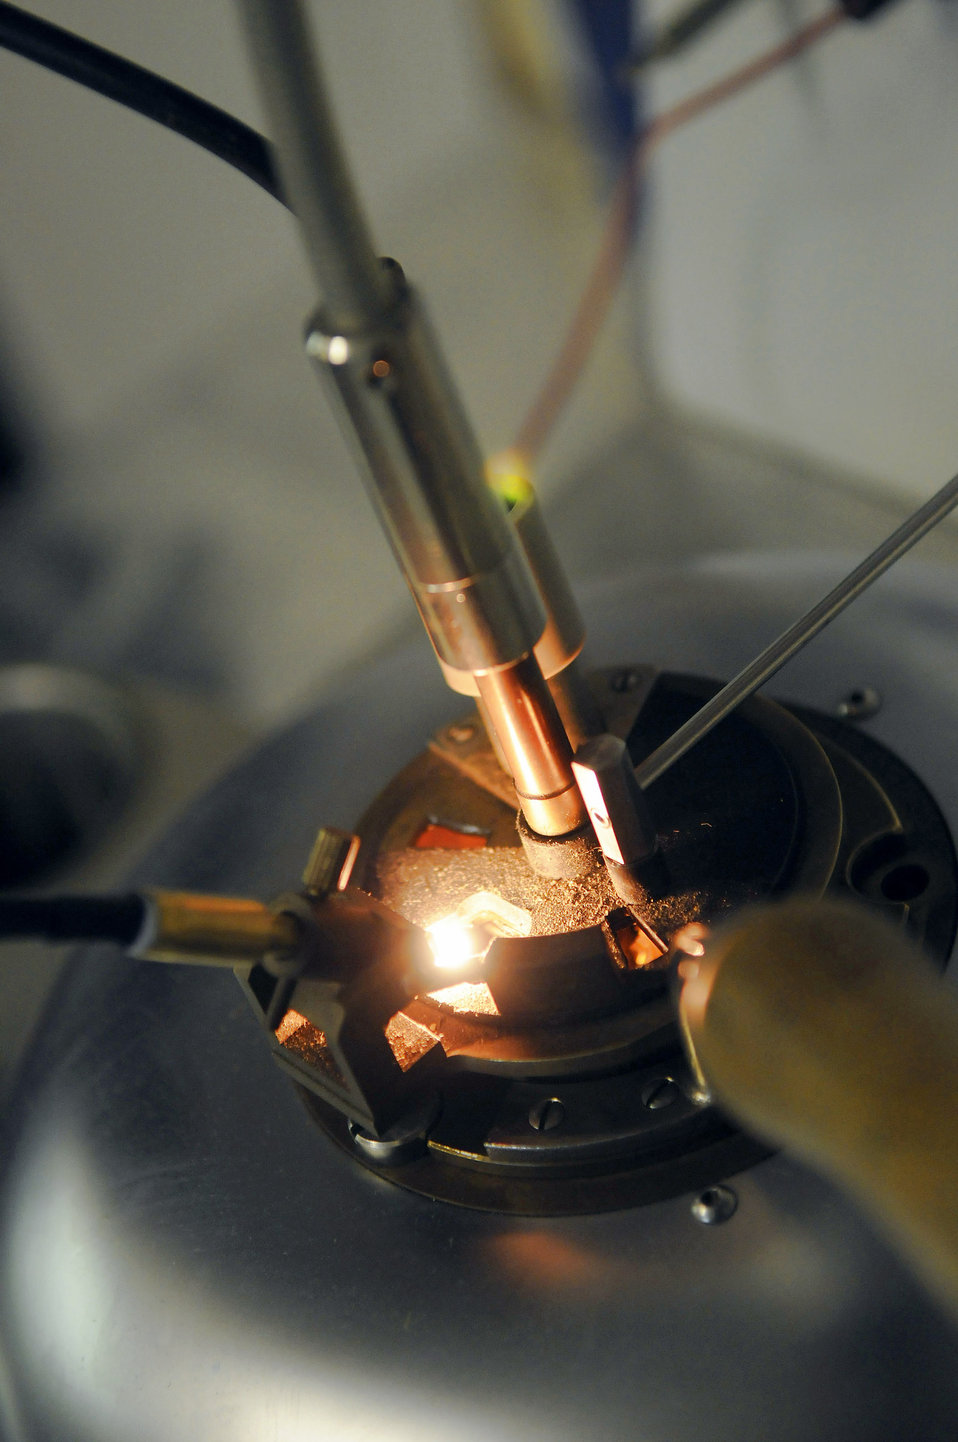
Fuel quality

An ignition coil is exposed over JP-8 fumes during a flash point test Dec. 8 at an air base in Southwest Asia. Staff Sgt. Ronald Gasper, a fuels lab technician assigned to the 379th Expeditionary Logistics Readiness Squadron, uses a flash tester to perform a flash point test. The flash point test is used to determine the temperature at which the fuel will ignite. The fuel is slowly warmed and every 2 degrees an ignition coil is briefly exposed over the fuel to identify how hot the fumes must be to ignite. Sergeant Gasper, a native of Omaha, Neb., is deployed from Scott Air Force Base, Ill.